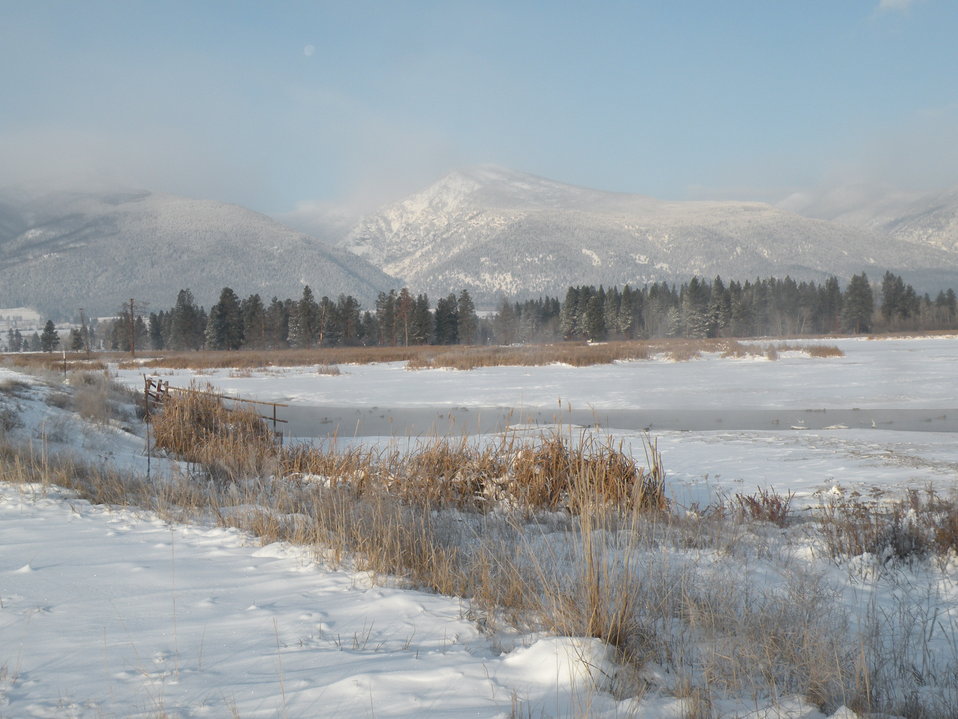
Winter Morning at Lee Metcalf National Wildlife Refuge

It's 10 degrees below zero with no wind as the sun is shines at Lee Metcalf National Wildlife Refuge in Montana. (2011)